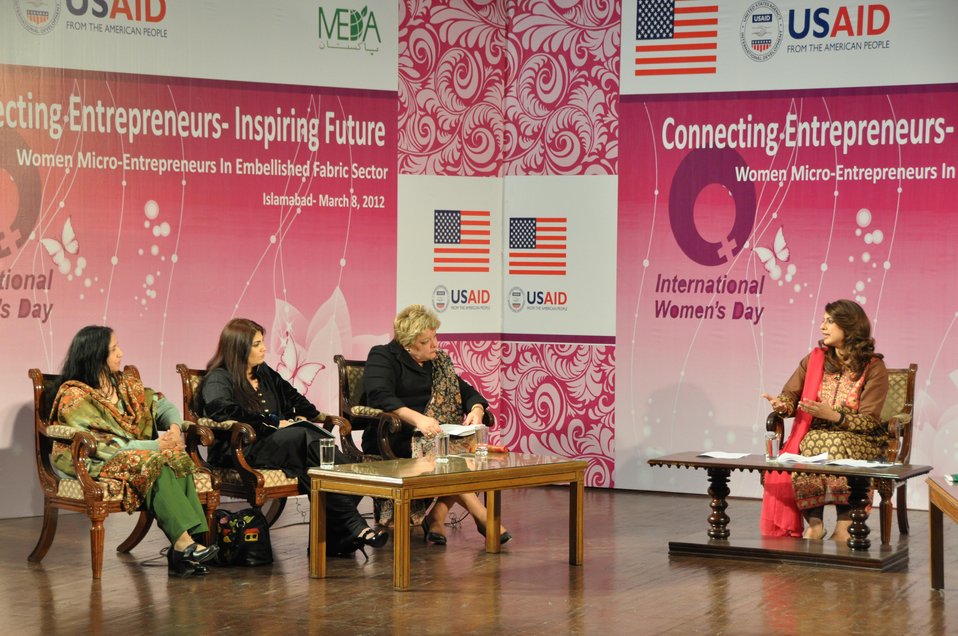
International Women’s Day

Islamabad, March 08, 2012 - The United States Agency for International Development (USAID) celebrated International Women’s Day, hosting a panel discussion with women entrepreneurs.
Panel members in addition to USAID’s
- Karen Freeman
- Wajeeha Nasreen, Sr. Product Development Manager, Gul Ahmed (famous Pakistani fabric brand)
- Dr. Nosheen, CEO, Generations (famous clothing brand)
- Razia Zubairi, Director General, Technical Education and Vocational Training Authority, Punjab
- Shaheen Khan, Sales Agent, ECDI, USAID sub-grantee